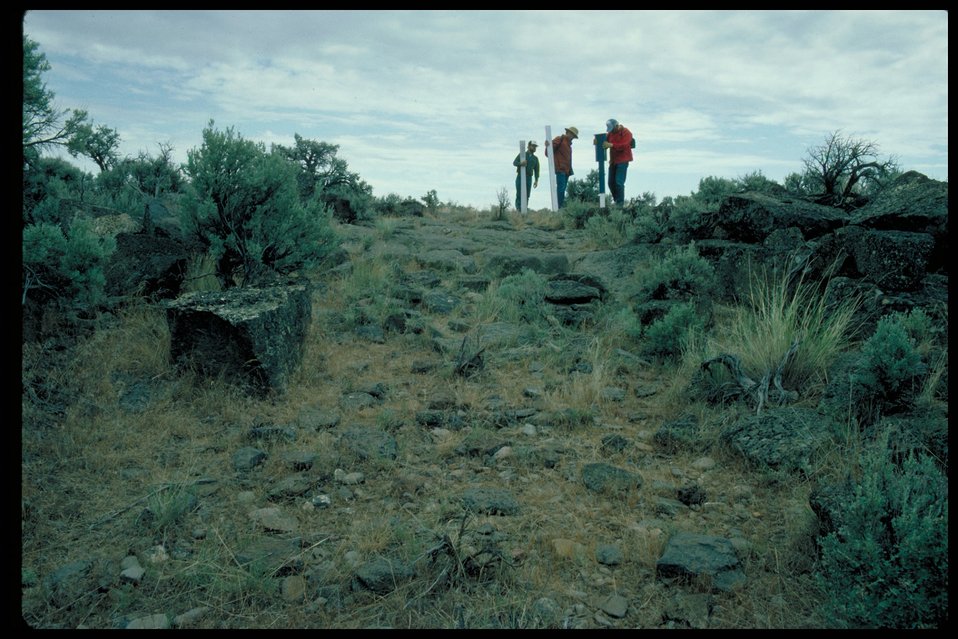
Oregon Trail east of Alkali Creek Lower Snake River District